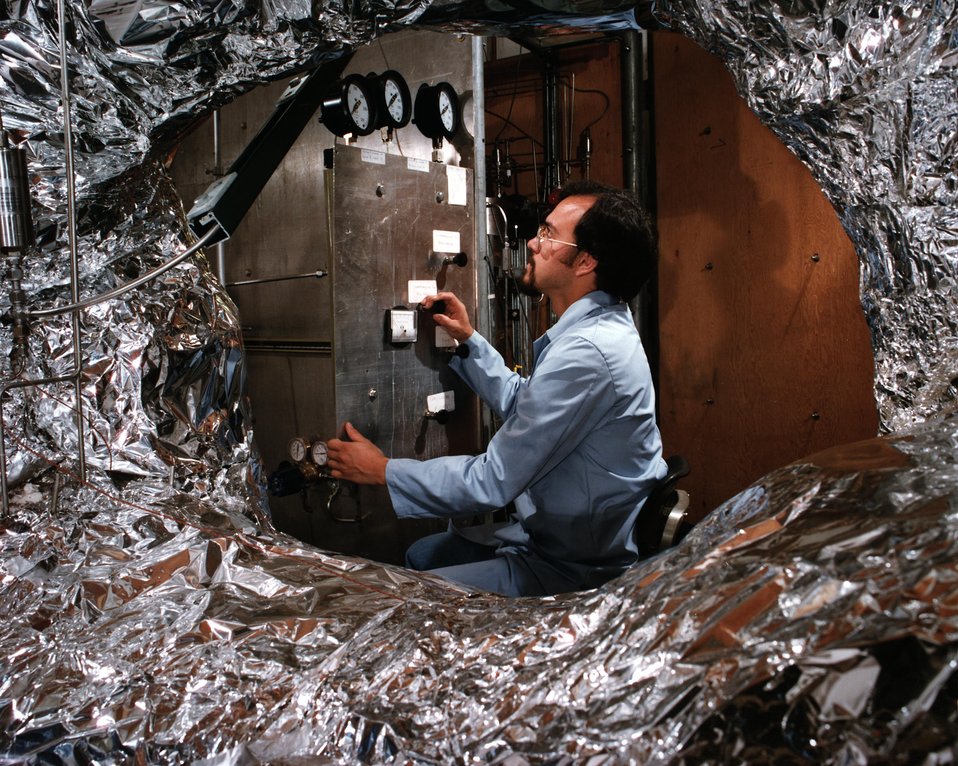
A TECHNICIAN IS USING THE REACTANT GAS FEED MANIFOLD WHICH IS GEARED THROUGH THE REACTOR HEATING LOOP.

THE PROCESS EVALUATION UNIT IS USED TO TEST VARIOUS METHODS OF CONVERTING BIOMASS INTO FUEL OIL. ONE OF THE LIQUEFACTION METHODS INVOLVES REACTING THE BIOMASS WITH CARBON MON- OXIDE AND HYDROGEN UNDER HIGH TEMPERATURES AND PRESSURES IN THE PRESENCE OF CATALYSTS.